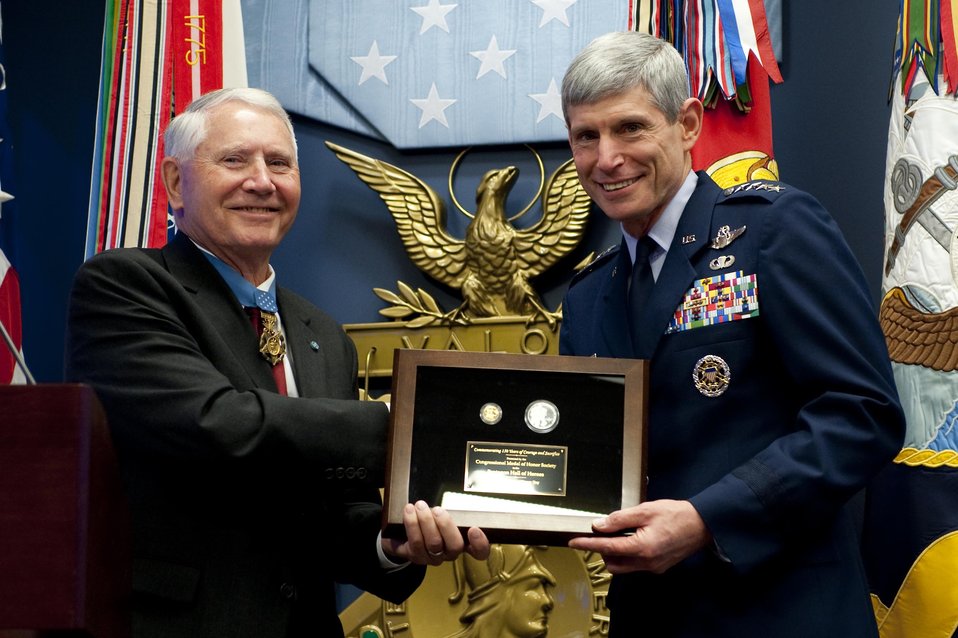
150th anniversary of the Medal of Honor

Retired Col. Leo K. Thorsness, president of the Congressional Medal of Honor Society, presents Air Force Chief of Staff Gen. Norton Schwartz with a memorial plaque March 25, 2011, during a ceremony honoring the 150th anniversary of the Medal of Honor in the Hall of Heroes at the Pentagon in Washington, D.C.